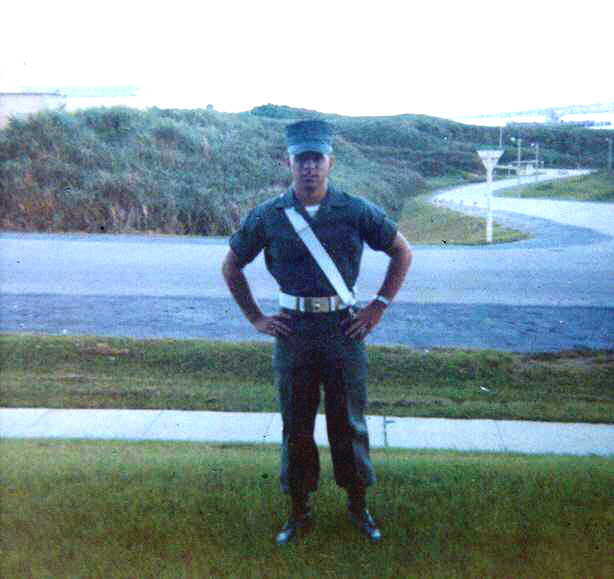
Mark Kildow, Regional GIS Coordinator with the Pacific Region, served with the Marines Corps in Vietnam. He joined right out of high school in 1970 and was on Active Duty until 1972. He was in the inactive Marine reserves for an additional four years.